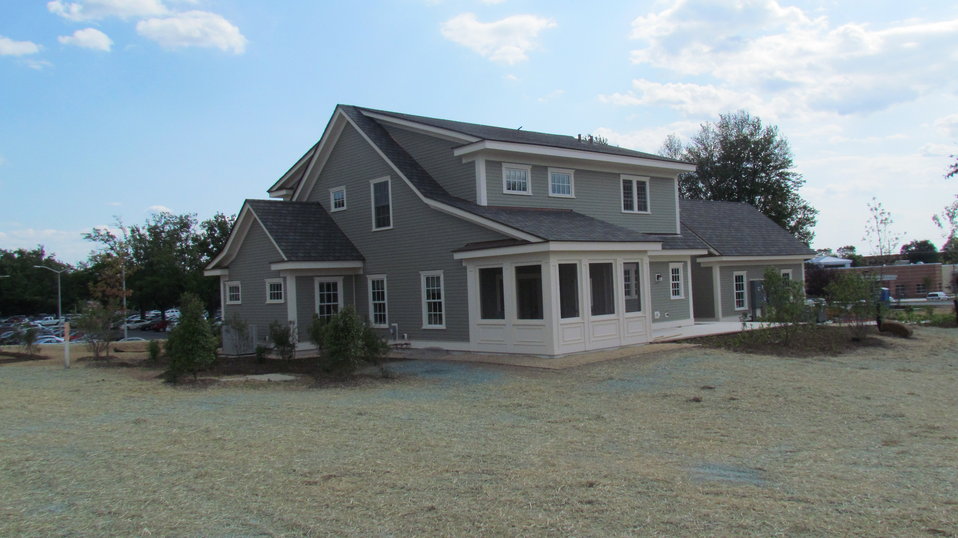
Rear and west side of completed NZERTF with landscaping in place.